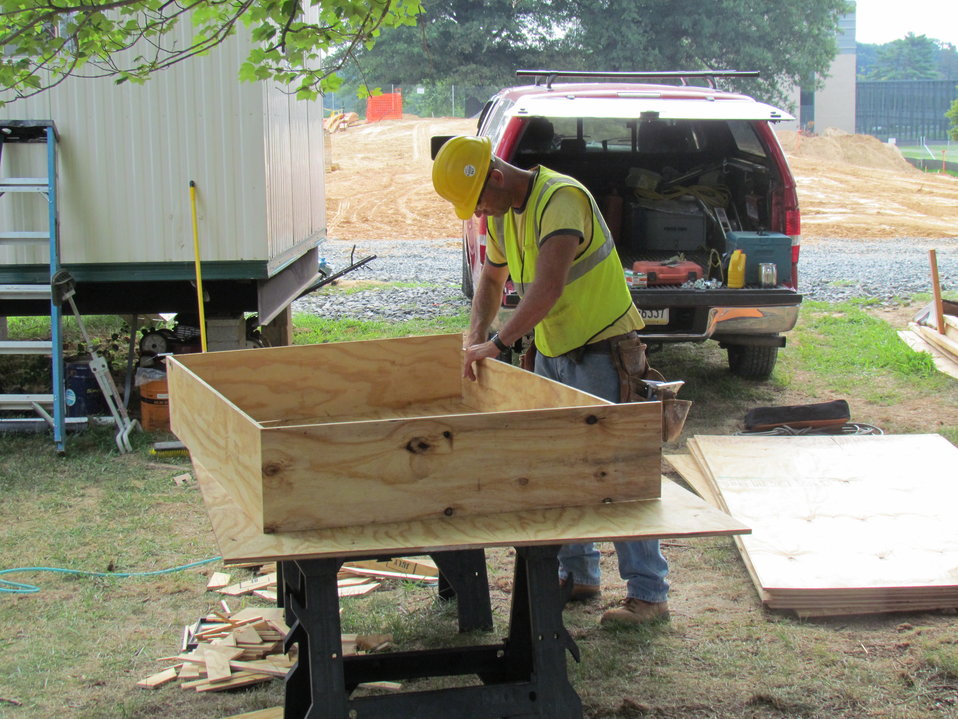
Net-Zero Energy Residential Test Facility - Workmen building plywood box that will be inserted into window opening. This box extends two inches past exterior wall. Once installed the two inches of exterior insulation will be flush with the exterior edge of this window box.